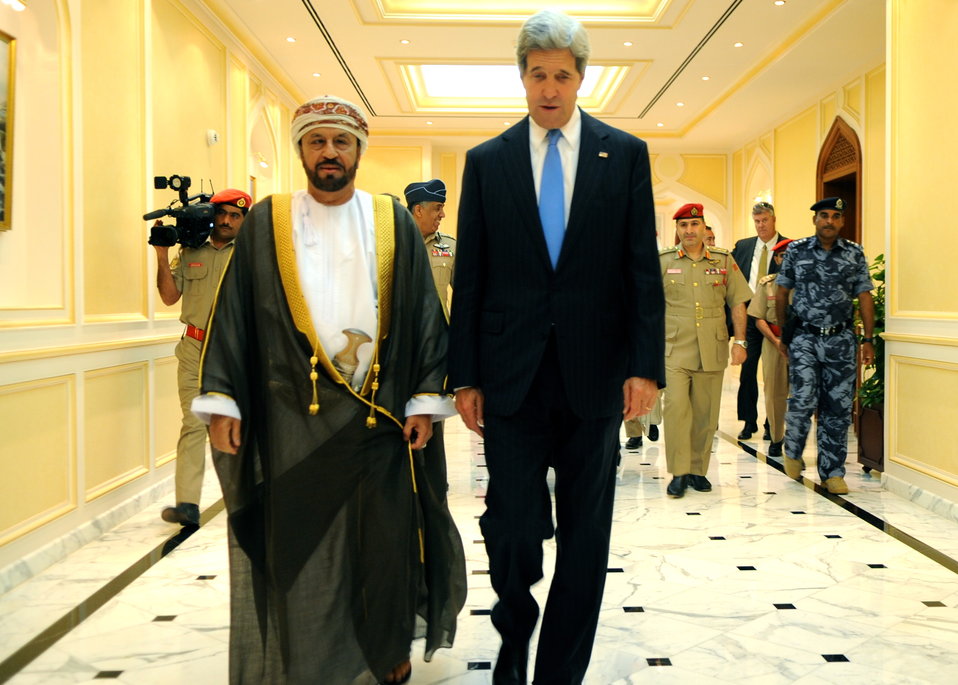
Secretary Kerry Meets With Omani Minister Responsible for Defense Affairs Sayyid Badr al-Busaidi

U.S. Secretary of State John Kerry walks with Omani Minister Responsible for Defense Affairs Sayyid Badr al-Busaidi before their meeting in Muscat, Oman, on May 22, 2013.